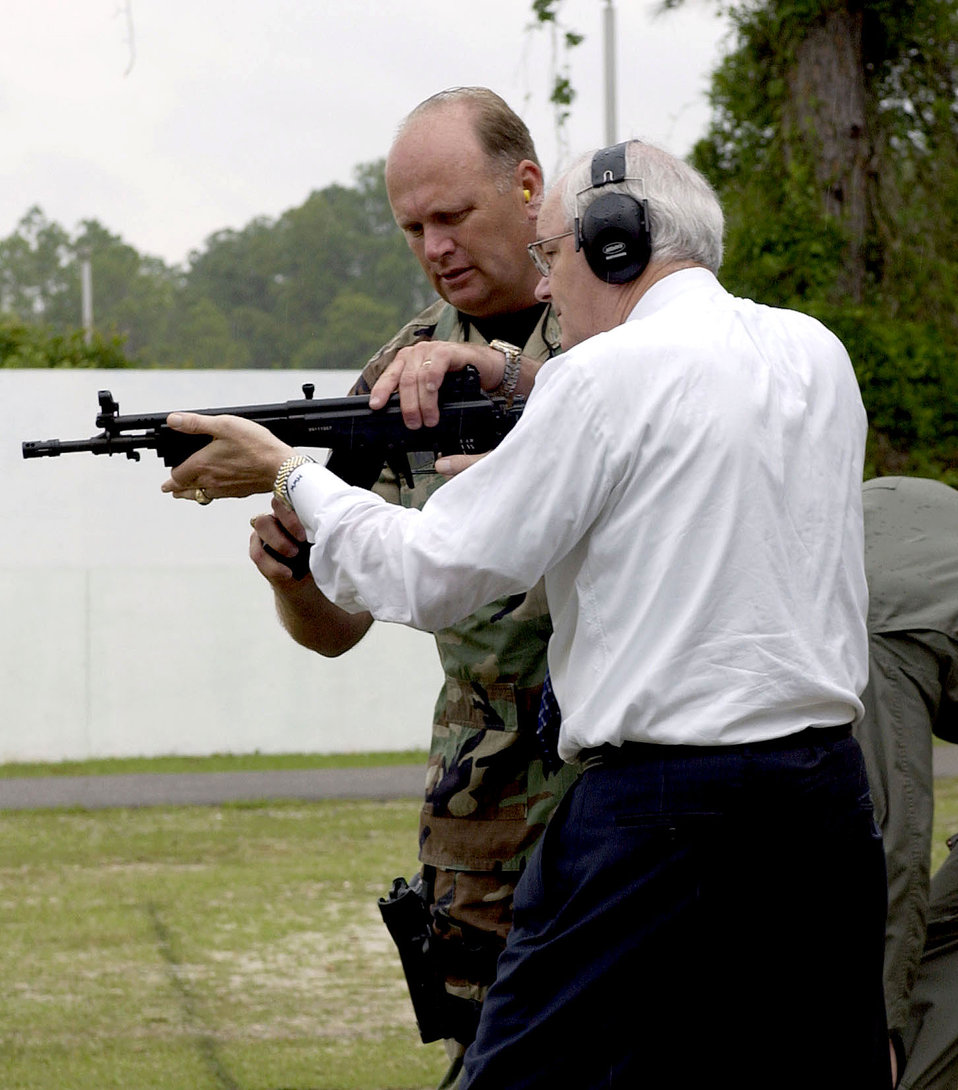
Secretary Wynne tours special ops command

Senior Master Sgt. Steven Moore helps Secretary of the Air Force Michael W. Wynne clear a jam on a Galil assault rifle at the Air Force Special Operations School at Hurlburt Field, Fla., on Tuesday, May 9, 2006. Sergeant Moore is with the asymmetric warfare division at the school.